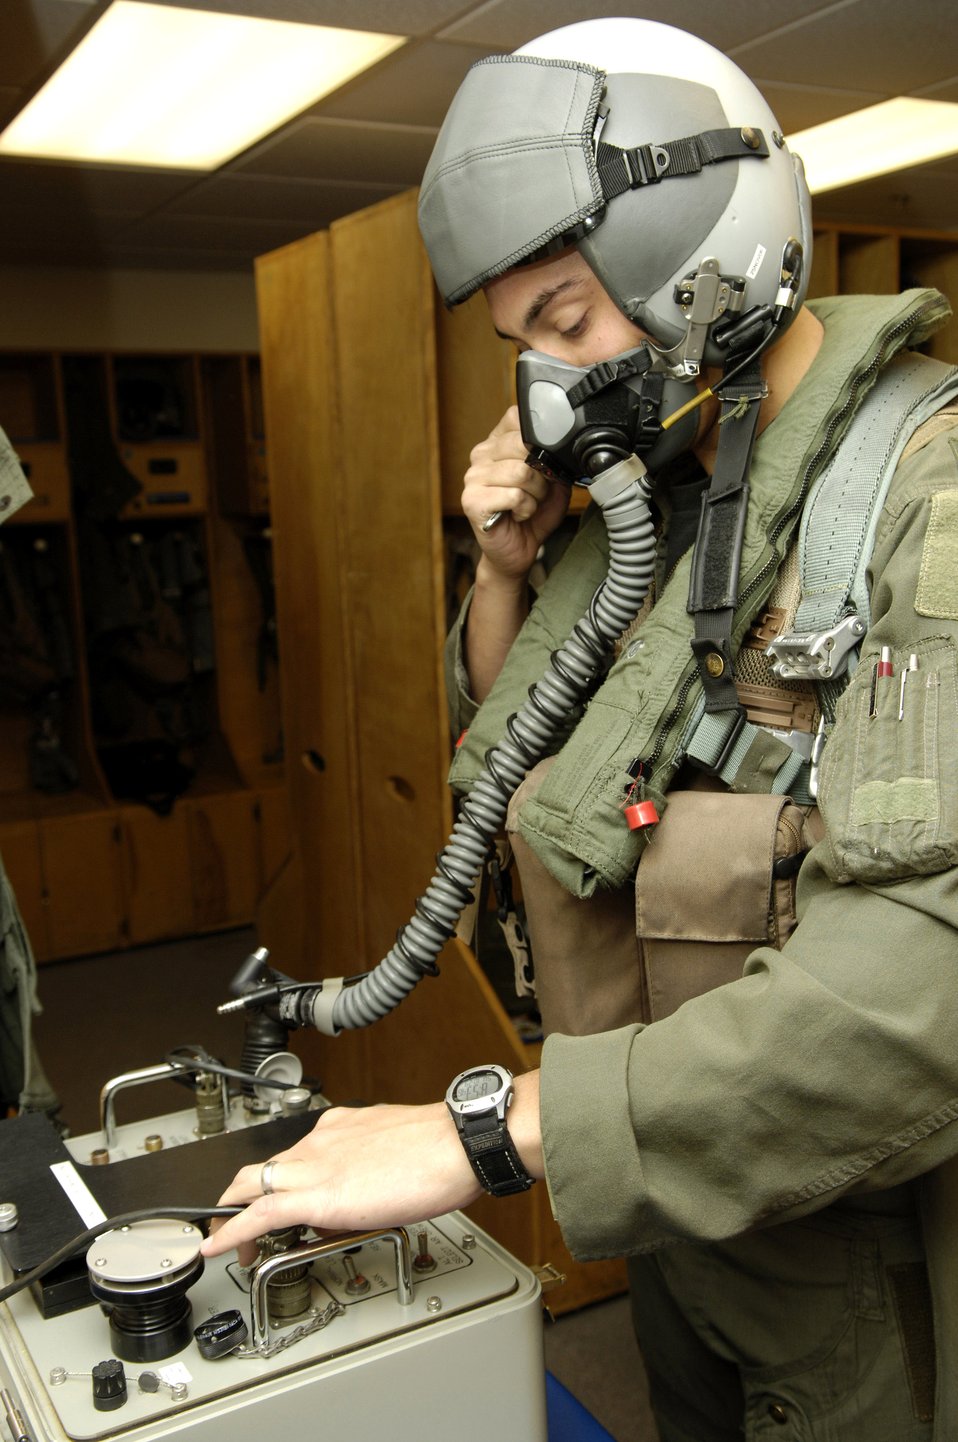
Taking an A-10 from pre-flight to flight

Capt. Andrew Tenenbaum tests his oxygen mask Oct. 29 during preparations for a mission. The test ensures that there are no leaks. Captain Tenenbaum is a pilot in the 354th Fighter Squadron at Davis-Monthan Air Force Base, Ariz.